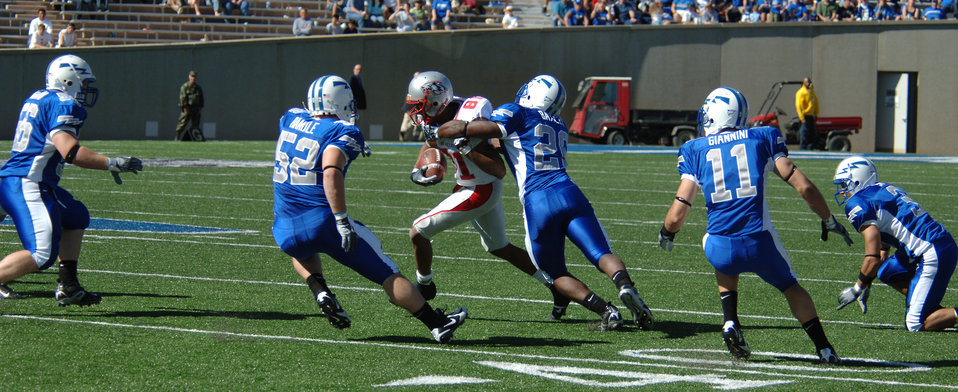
Air Force beats New Mexico 24-7

New Mexico wide receiver Travis Brown is swarmed by Air Force defenders during Sept. 30's game at Falcon Stadium. The Air Force defense held New Mexico to 273 yards of total offense in Air Force's 24-7 victory.